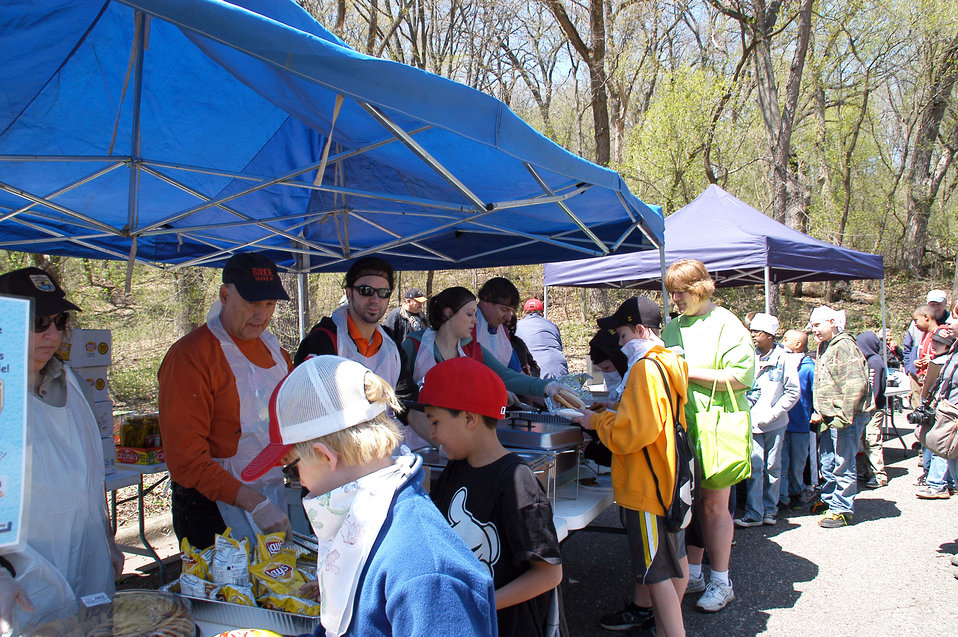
Lunch is Served

Students line up to get their food for the outdoor picnic.